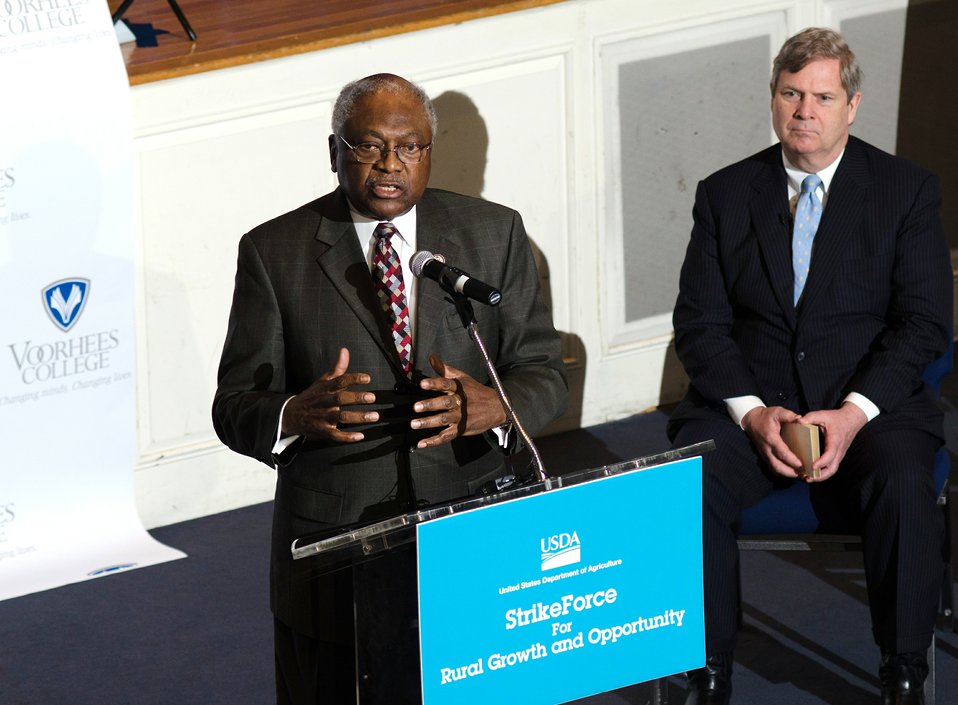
U.S. Congressman Jim Clyburn (SC) introduces Agriculture Secretary Tom Vilsack during the U.S. Department of Agriculture's (USDA) Strike Force for Rural Growth and Opportunity event held at Voorhees College in Denmark, SC, on Tuesday, March 26, 2013.